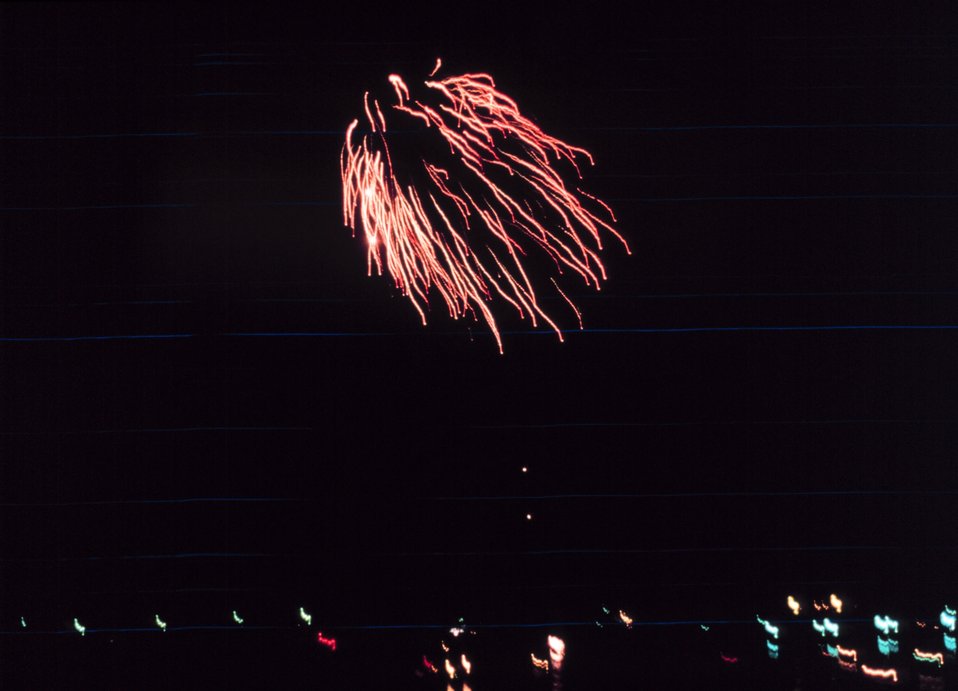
4th of July fireworks at Gloucester.